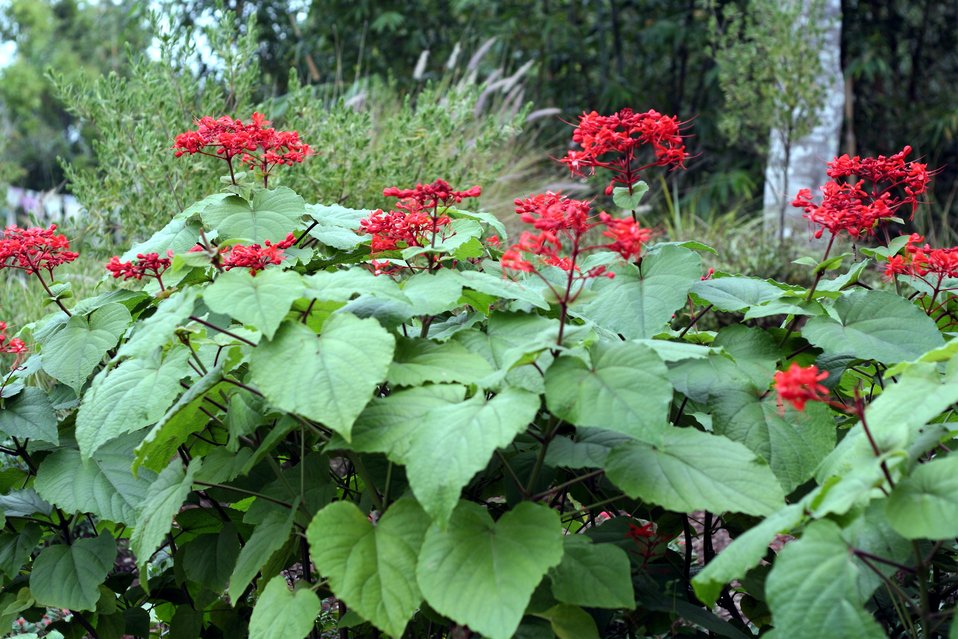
മലയാളം: Pagoda trees. Orlando, FL